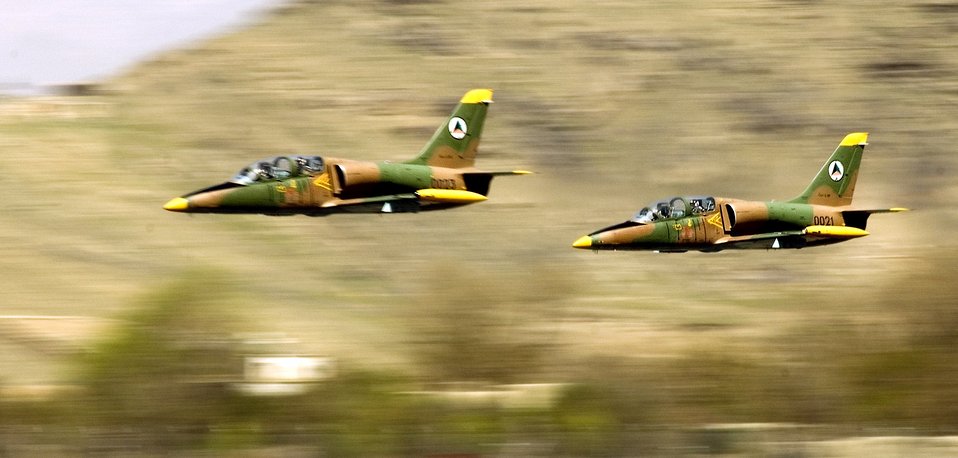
U.S. forces mentor Afghan Air Corps to 'stand on own'

Afghan National Air Corps L-39 Albatross jets take off in a formation practice for the aerial parade in the upcoming Afghan National Day in Kabul. Air Force mentors assigned to Defense Reform Directorate Air Division under Combined Security Transition Command - Afghanistan provide guidance to soldiers with the Maintenance Operations Group for the ANAC.